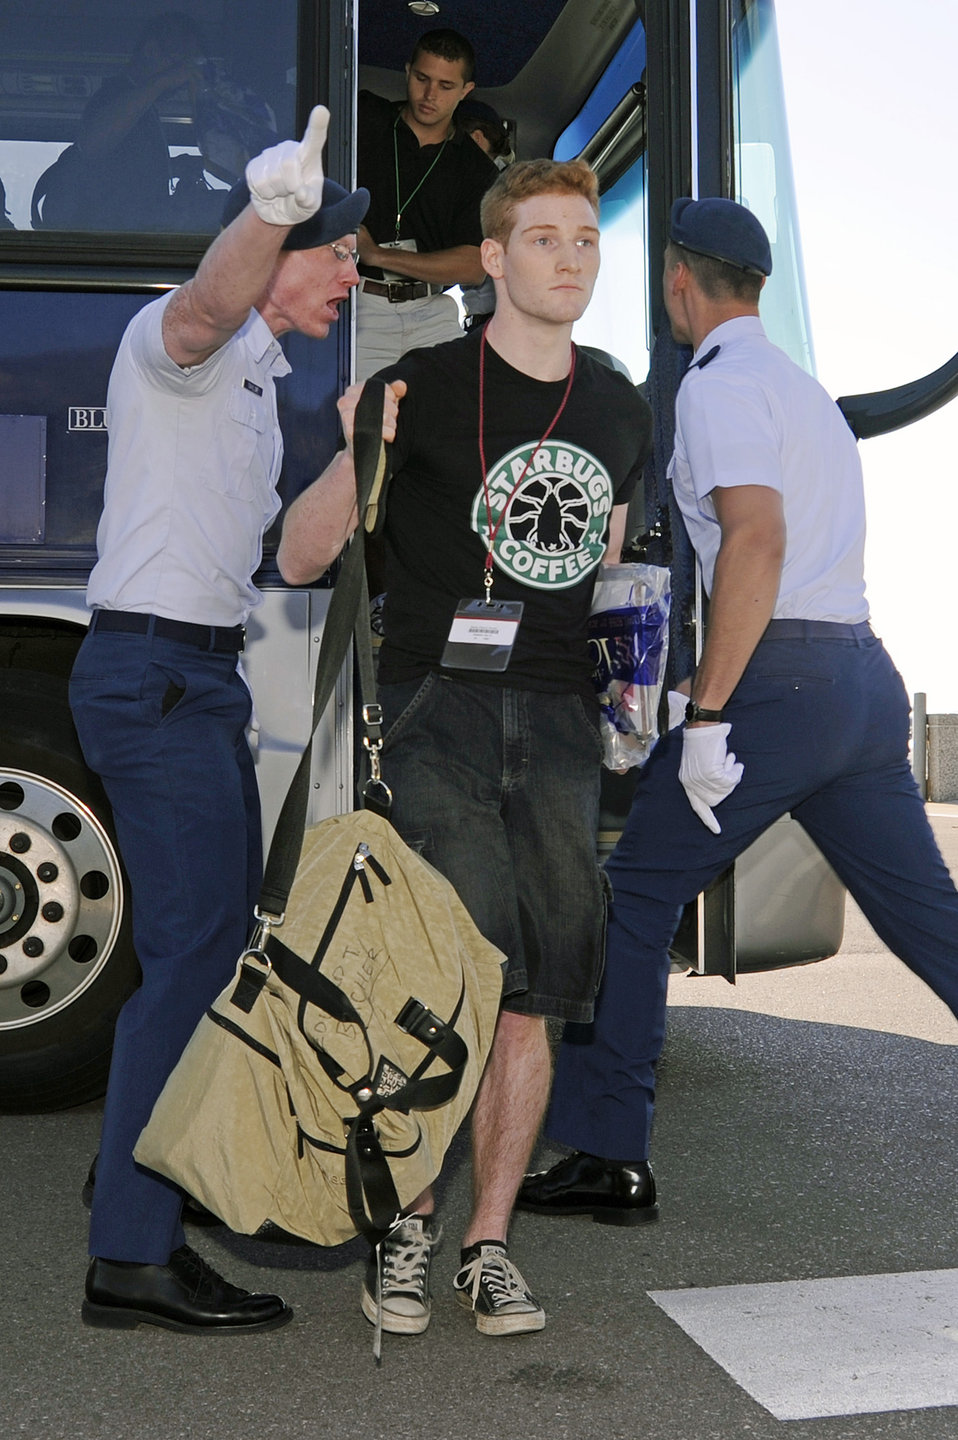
Class of 2014 joins long blue line

Basic Cadet Eduard Bucher steps off a bus in the cadet area as members of the class of 2014 begin inprocessing June 24, 2010, at the U.S. Air Force Academy, Colo. The Academy received more than 11,000 applications for the Class of 2014, up 17 percent from 2009.